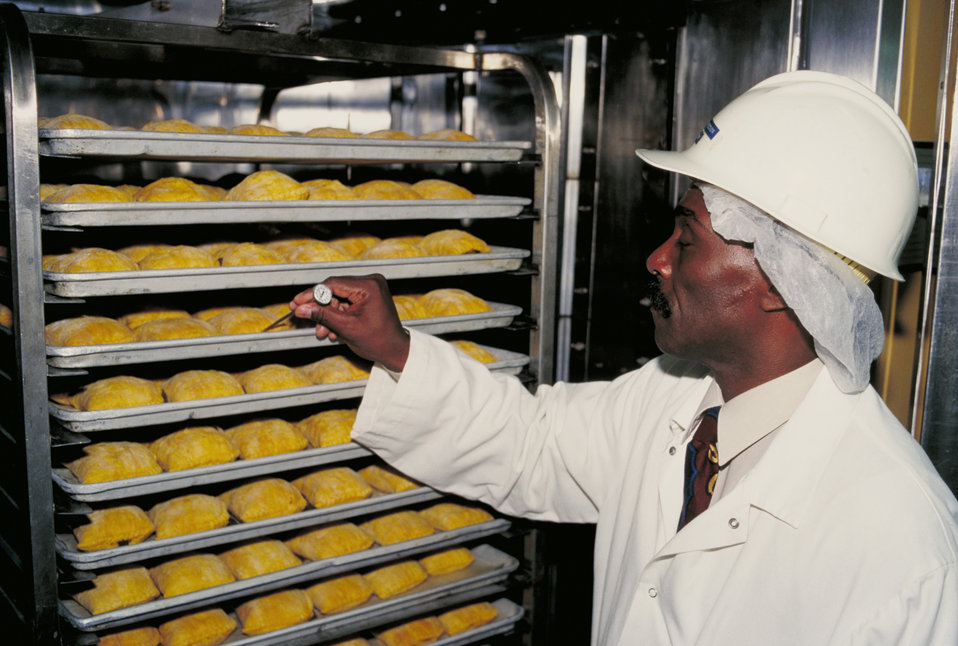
U.S. Department of Agriculture (USDA) Food Safety Inspection Service (FSIS) inspector checks the temperature Jamaican beef patties at various control points to compare them with those measured and recorded by the plant to prevent multiplication of pathogenic bacteria in compliance with Hazard Analysis and Critical Control Points (HACCP) issued by FSIS on June 15, 1995. USDA photo Lester Shepherd.